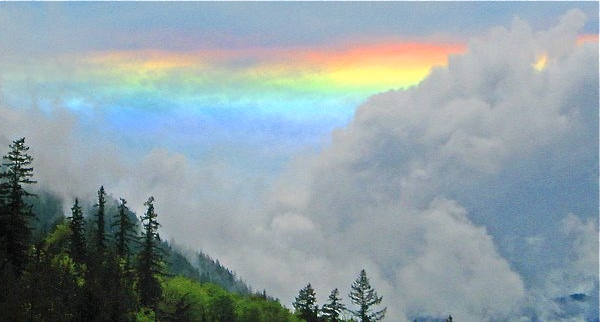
Rainbow

Quilcene Fish Hatchery, WA
(Photo: Mike Elam/USFWS)

Celebrating a New Year. In January, 2012, Service employees prepared to start another year dedicated to conservation and preservation.